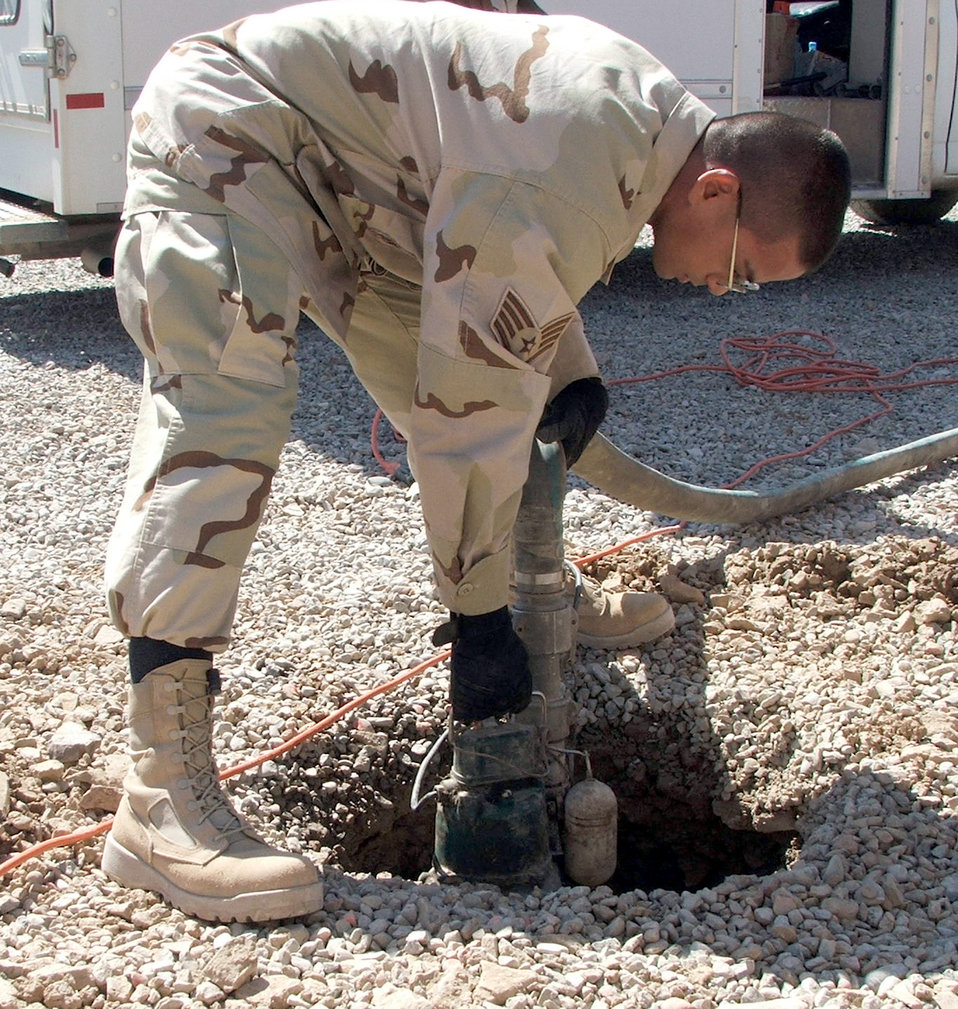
Civil engineers improving Uzbek base

KARSHI-KHANABAD AIR BASE, Uzbekistan -- Staff Sgt. Junicio Cacal uses a water pump to remove water from a fencepost hole while working on a construction project here. He is assigned to the 416th Expeditionary Mission Support Squadron's civil engineer flight and is deployed from Vandenberg Air Force Base, Calif.